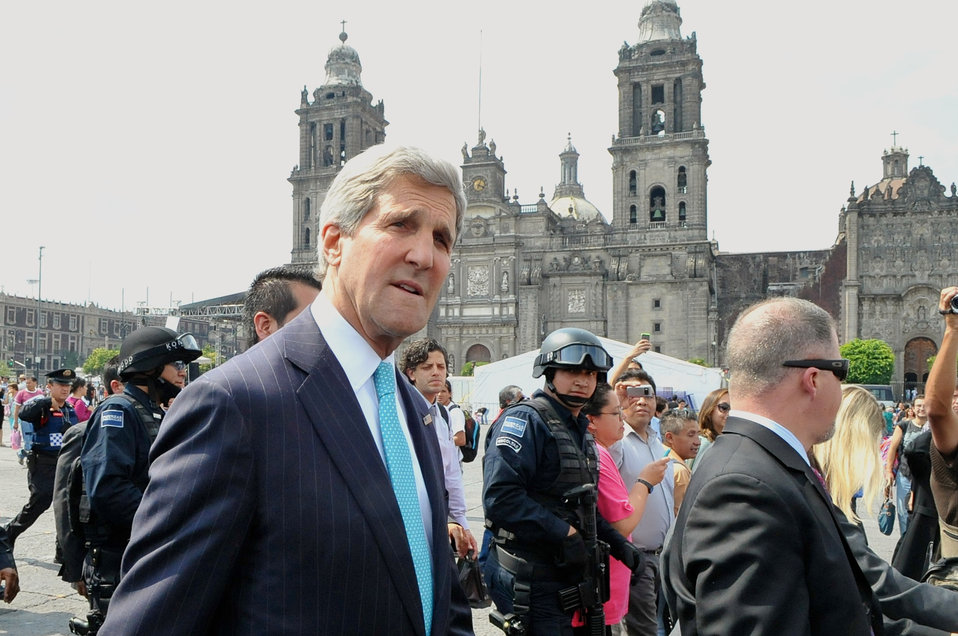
Secretary Kerry Walks Across Zocalo Plaza in Mexico City

U.S. Secretary of State John Kerry crosses Zocalo Plaza in downtown Mexico City amid a day of government and business meetings in Mexico on May 21, 2014.